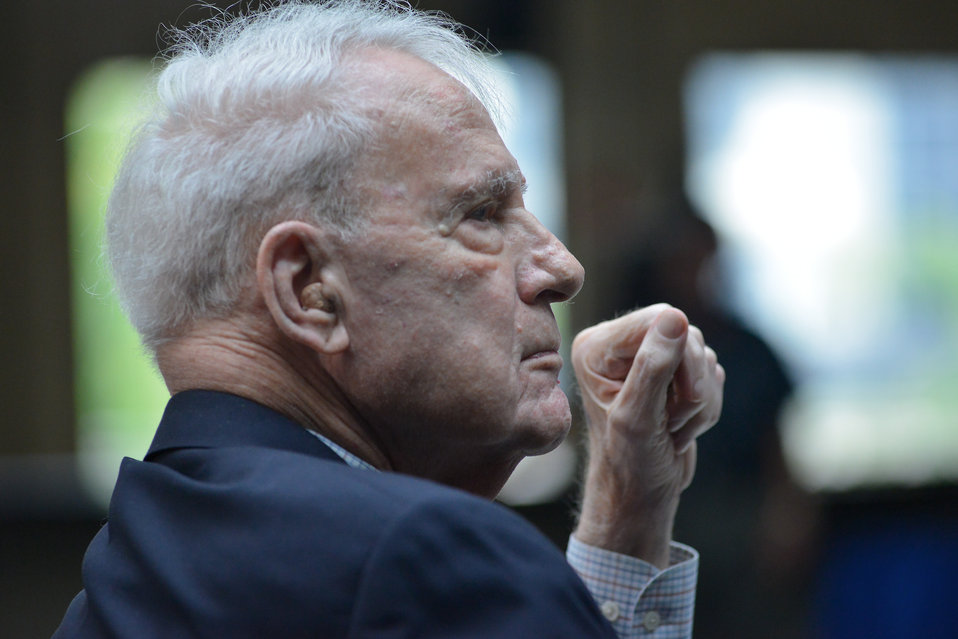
Secretary Schlesinger

Secretary James Schlesinger, first Secretary of Energy, listens during Secretary Chu’s keynote remarks.